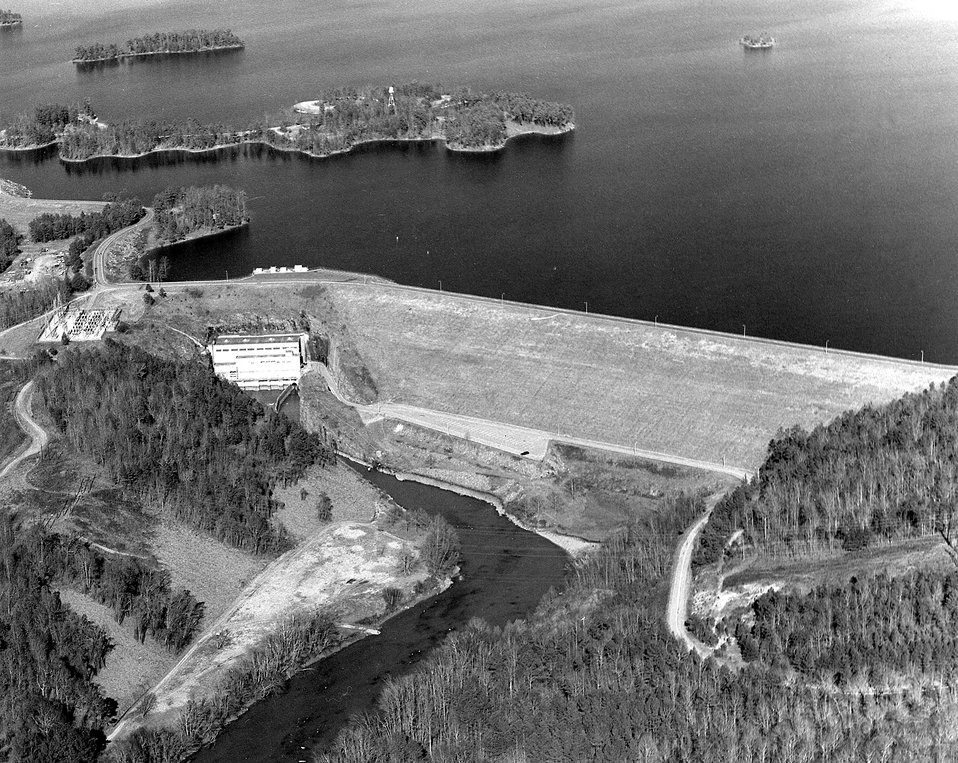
Buford Powerhouse & Dam. c. undated